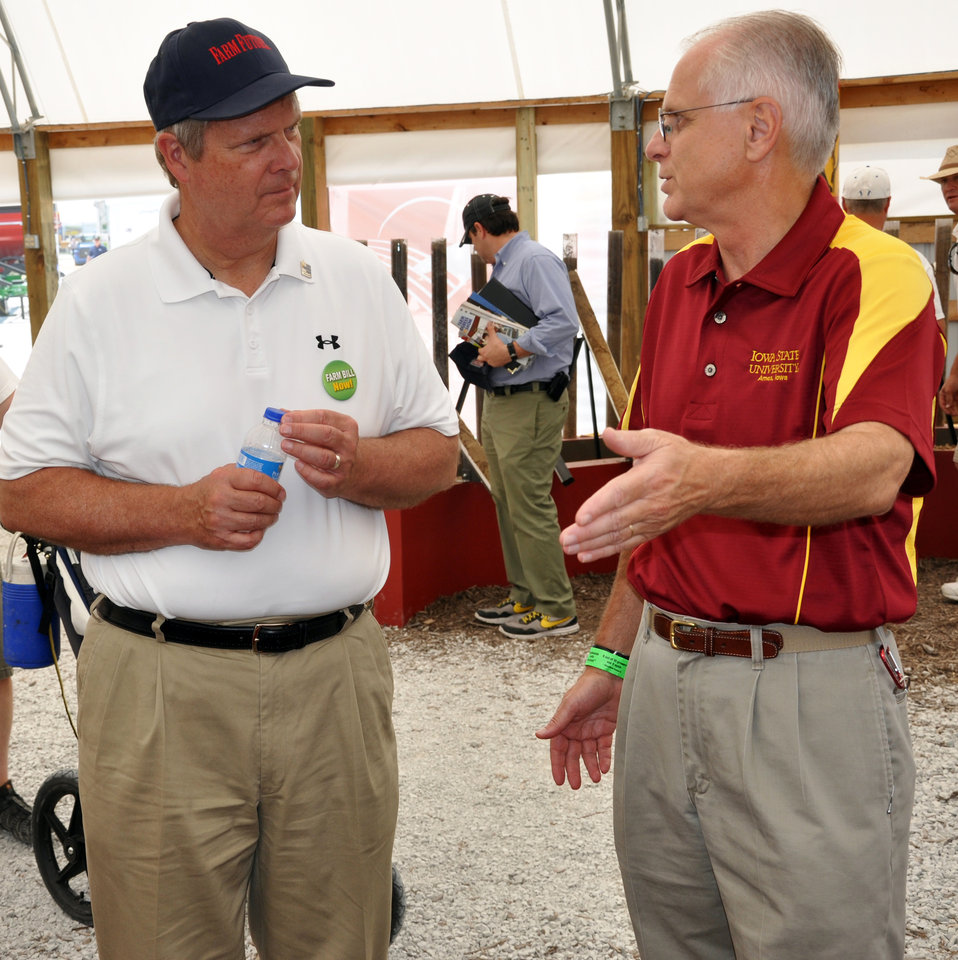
Iowa State University Soil Science Professor Lee Burris talks to Agriculture Secretary Tom Vilsack about Iowa's various soil types during the 2012 Farm Progress Show in Boone, Iowa, on Aug. 30, 2012.